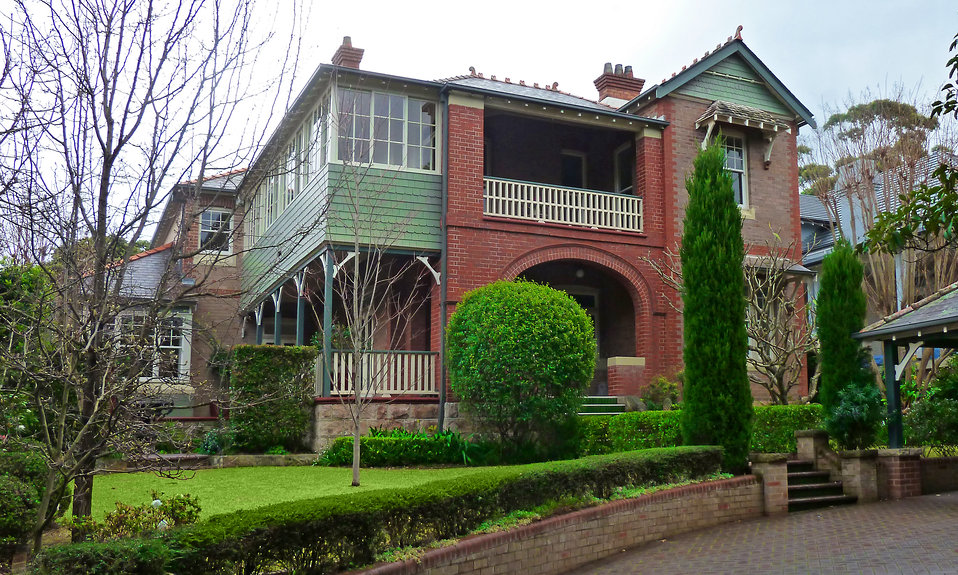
18 Gerald Avenue, Roseville, New South Wales, Australia.